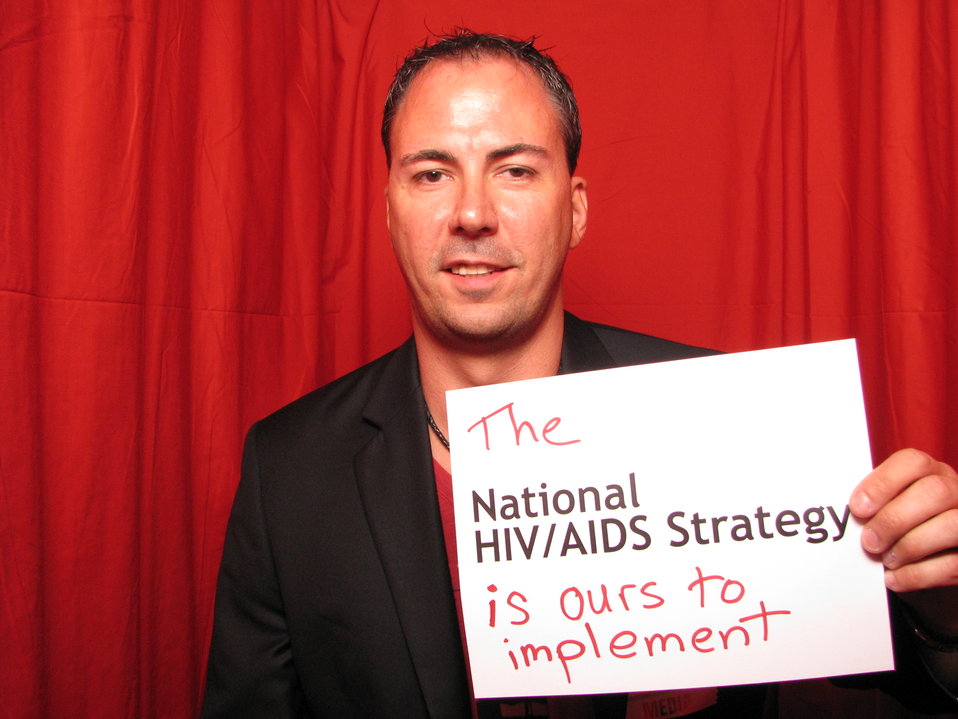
The National HIV/AIDS Strategy is ours to implement

From the AIDS.gov photo booth at the U.S. Conference on AIDS, September 2010 (Orlando, FL).